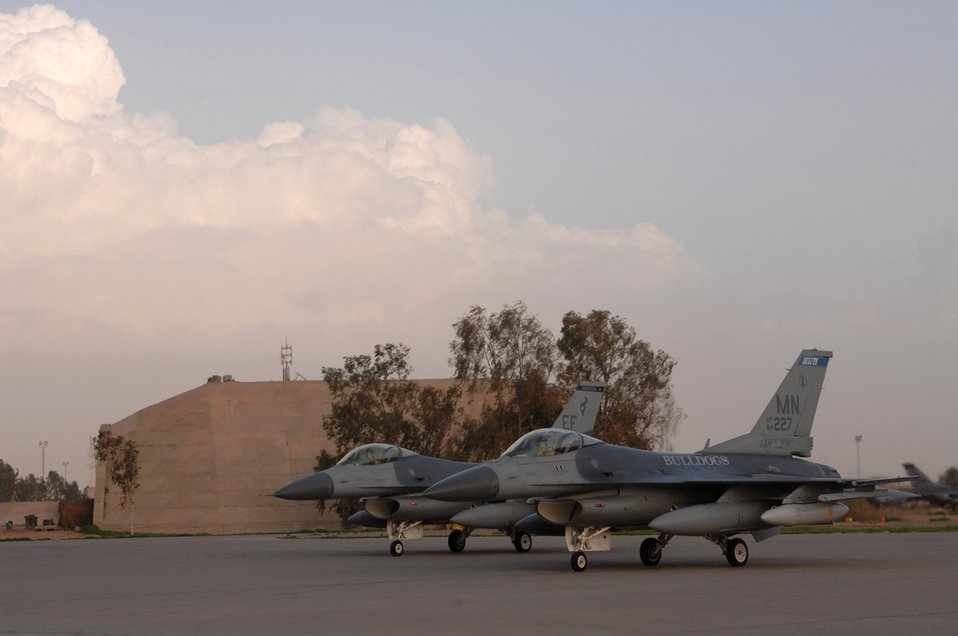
Falcons fly in for the fight

Two F-16 Fighting Falcons assigned to the 332nd Expeditionary Fighter Squadron sit on the ramp Feb. 26, after recently arriving in Balad Air Base, Iraq. The F-16s are deployed from the Minnesota Air National Guard's 148th Fighter Wing along with roughly 400 guardsmen in support of Operation Iraqi Freedom.